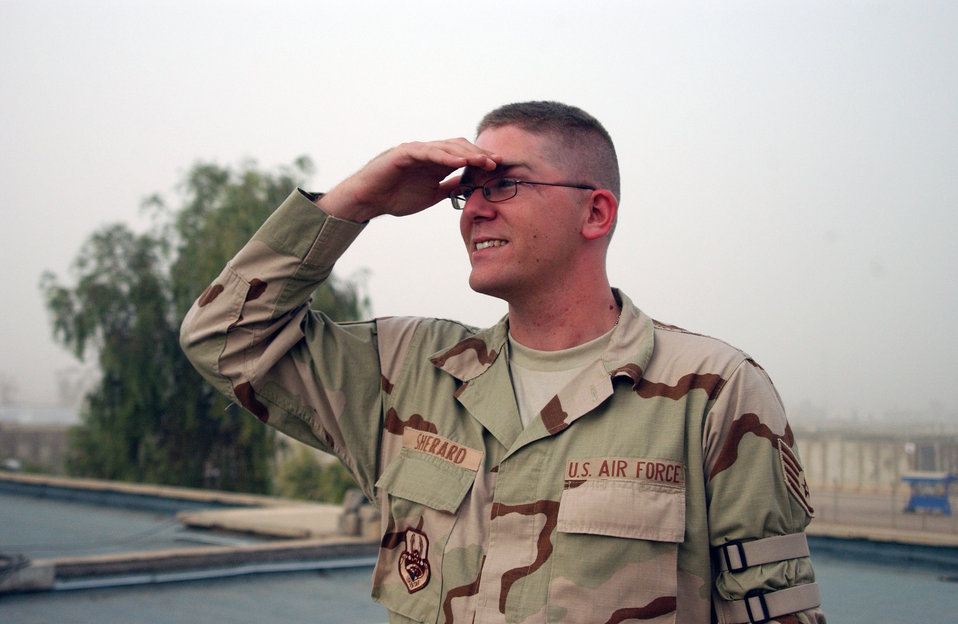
Balad combat weather flight ensures safe travel

Staff Sgt. Ronald Sherard takes a scan of the weather on the observation deck Oct. 16 at Balad Air Base, Iraq. Sergeant Sherard is a combat weather forecaster assigned to the 332nd Expeditionary Operations Support Squadron and is deployed from Offutt Air Force Base, Neb.